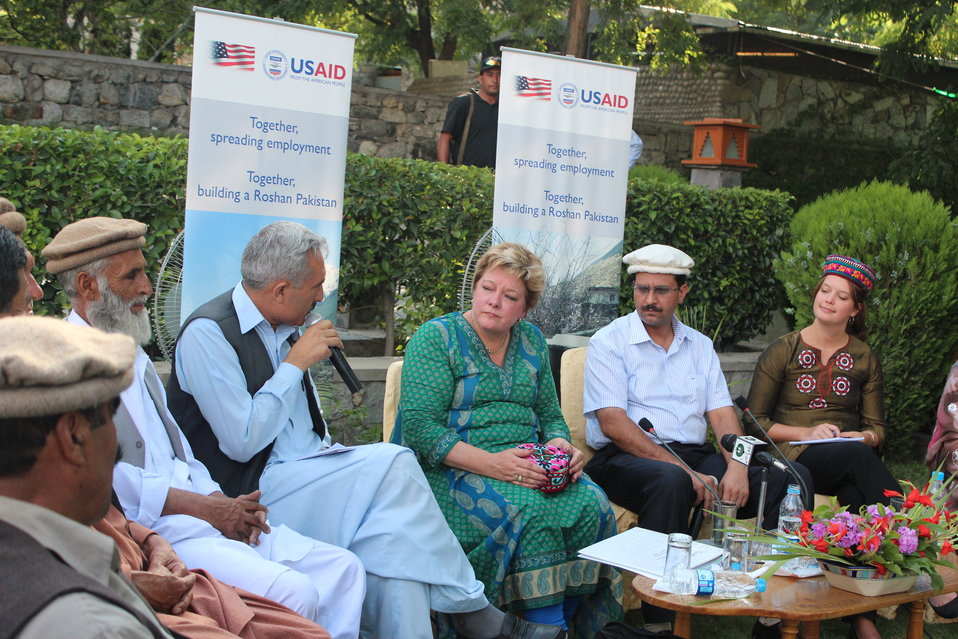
IMG USAID Deputy Country Director Karen Freeman met with 6-8 beneficiaries from Gupis Rural Support Program

On Sunday, USAID Deputy Country Director Karen Freeman met with 6-8 beneficiaries from Gupis Rural Support Program to learn about their project funded by a USAID grant. The meeting took place at Serena Hotel in Gilgit.